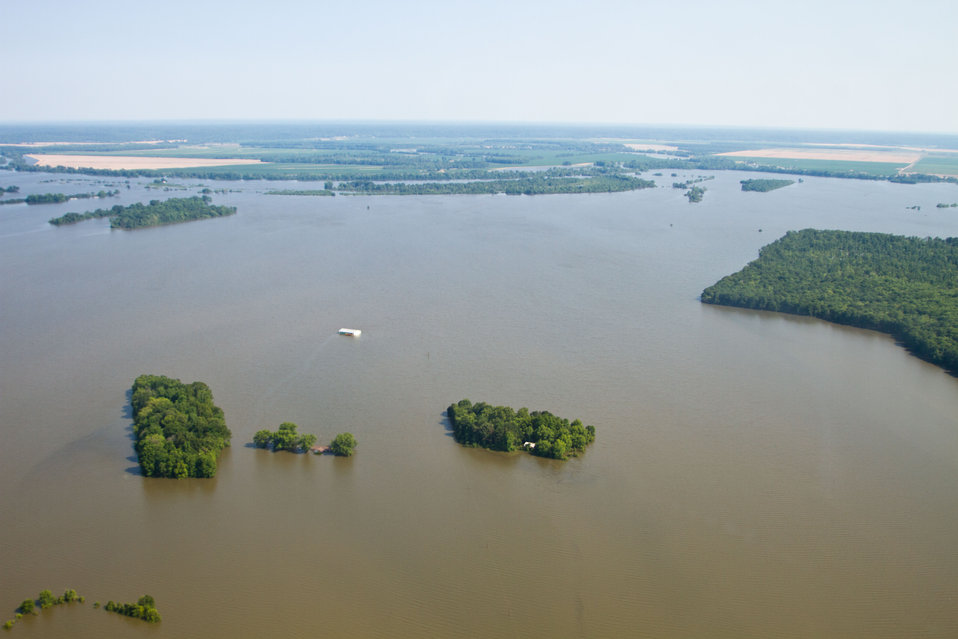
Aerial view of Mississippi River flood of farms, wilderness, and populated areas, on Thursday, May 19, 2011. from the MS side. Aerial platform was a UH-60 Blackhawk commanded by Col. Kennedy and his flight crew from the Army Aviation Support Facility #1 at Hawkins Field in Jackson, MS.